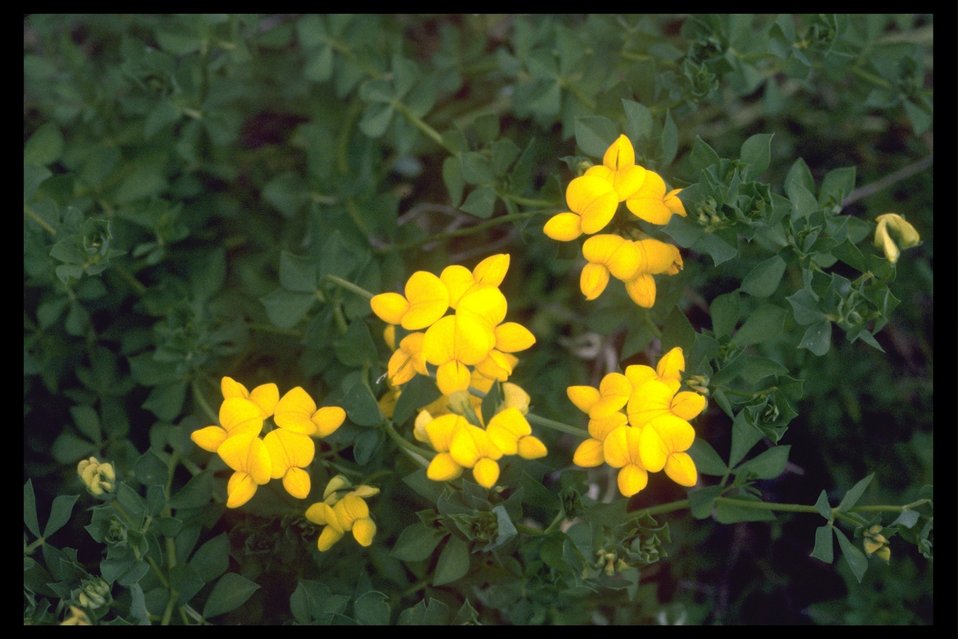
Birdfoot Trefoil (Lotus corniculatus) along the roadside near Lost Creek Lake.